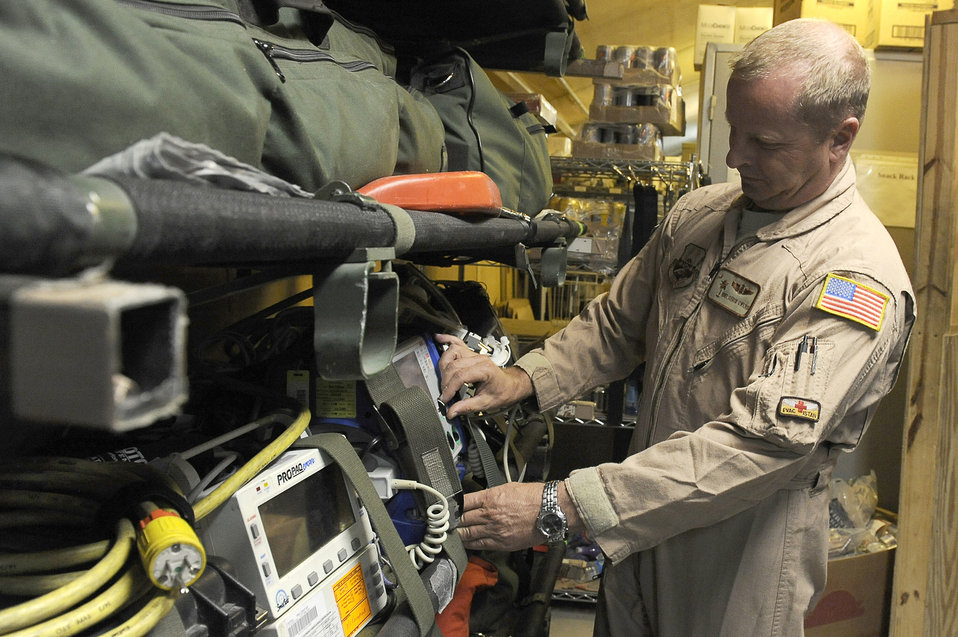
Contingency aeromedical staging facility Airmen get wounded warriors home

Master Sgt. Christopher Owens is the aeromedical evacuation operations team NCO in charge at the 455th Expeditionary Aeromedical Evacuation Flight. Sergeant Owens manages aeromedical evacuation stage operations and supervises launch and recovery of aeromedical evacuation missions at Bagram Airfield, Afghanistan.